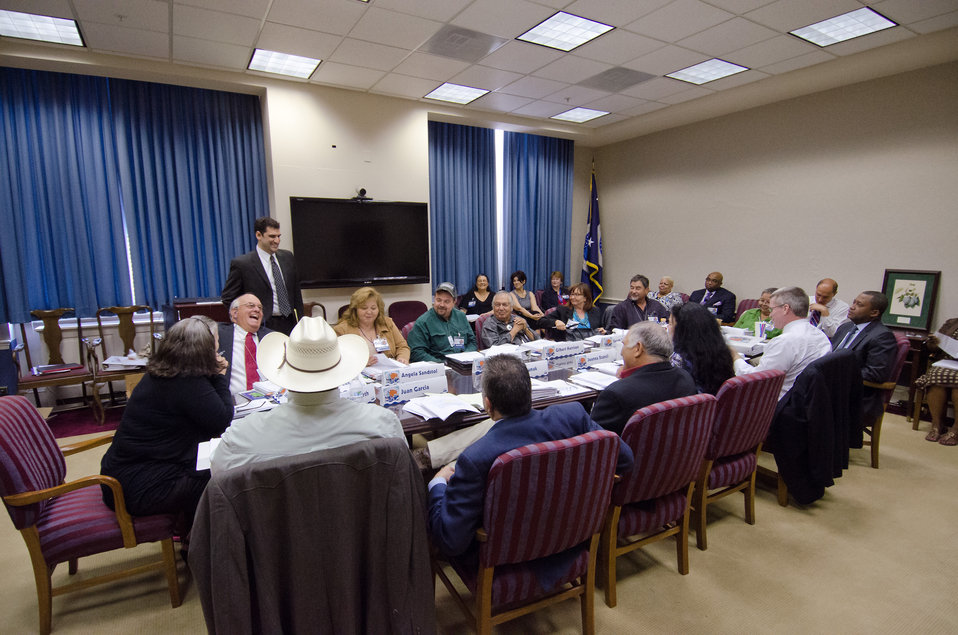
U.S. Department of Agriculture's (USDA) Office of General Council for Civil Rights Rick Gibson was lead attorney for the Keepseagle Settlement and talks with the USDA Council for Native American Farming and Ranching (CNAFR) representatives meeting on Monday, Aug. 13, 2012 at the USDA headquarters Whitten Building, in Washington, D.C. CNAFR was created to advise the Secretary on ways to eliminate barriers to participation for Native American Farmers and Ranchers in USDA programs. The Council was established as part of the Keepseagle settlement, and is conducted under the oversight of USDA's Office of Tribal Relations, which is part of the Office of the Secretary of Agriculture. The Director of Tribal Relations Joanna Mounce Stancil serves as Designated Federal Official (DFO) for the Council.